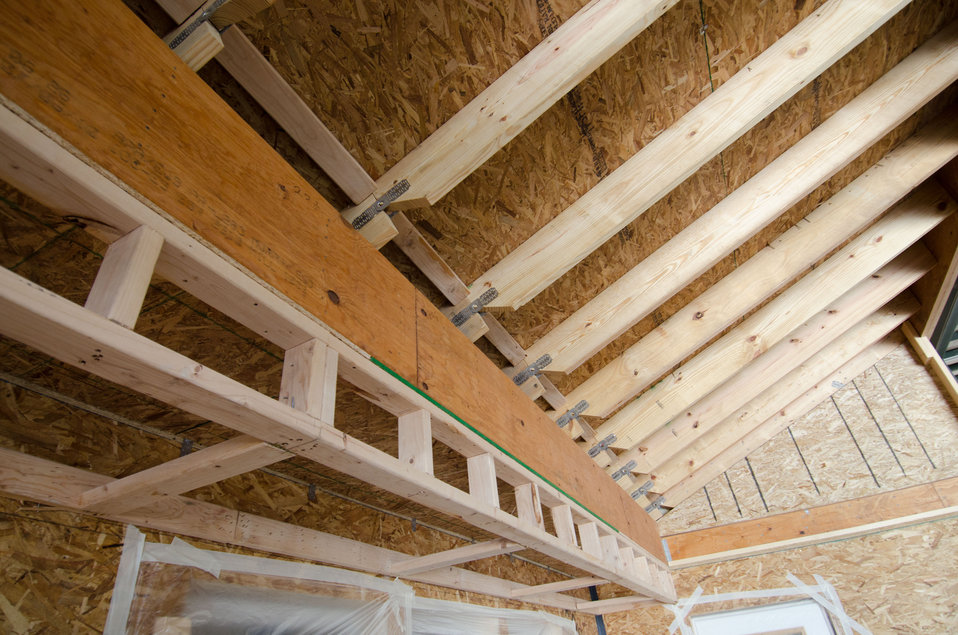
Hinged roof rafters allow the roof to be transported at a lower height on roadways. The energy efficient manufactured home stands ready for dry walling at Stardust Industries on Wednesday, July 13, 2011. They are helping retool and redirect Kentucky’s houseboat manufacturing industry – which has been decimated because of the struggling economy – by using its facilities and manpower to create low-cost housing that is energy efficient. Rural Development obligated $499,000 in Rural Business Enterprise Grant funds to support this unique endeavor. Up until a few years ago, there were several successful houseboat manufacturers in the four-county area surrounding the city of Somerset. Most have now ceased operation or drastically reduced output, which has led to dramatic, long-term job loss. These new energy efficient homes will be constructed in redesigned, refitted houseboat factories using local workers that have been retrained.